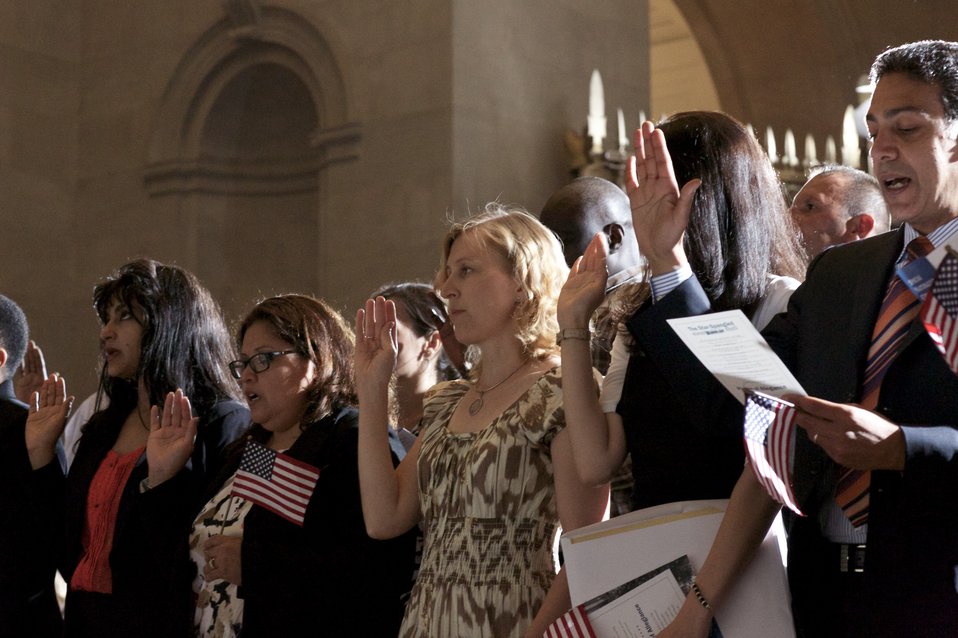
Naturalization Ceremony with Michelle Obama